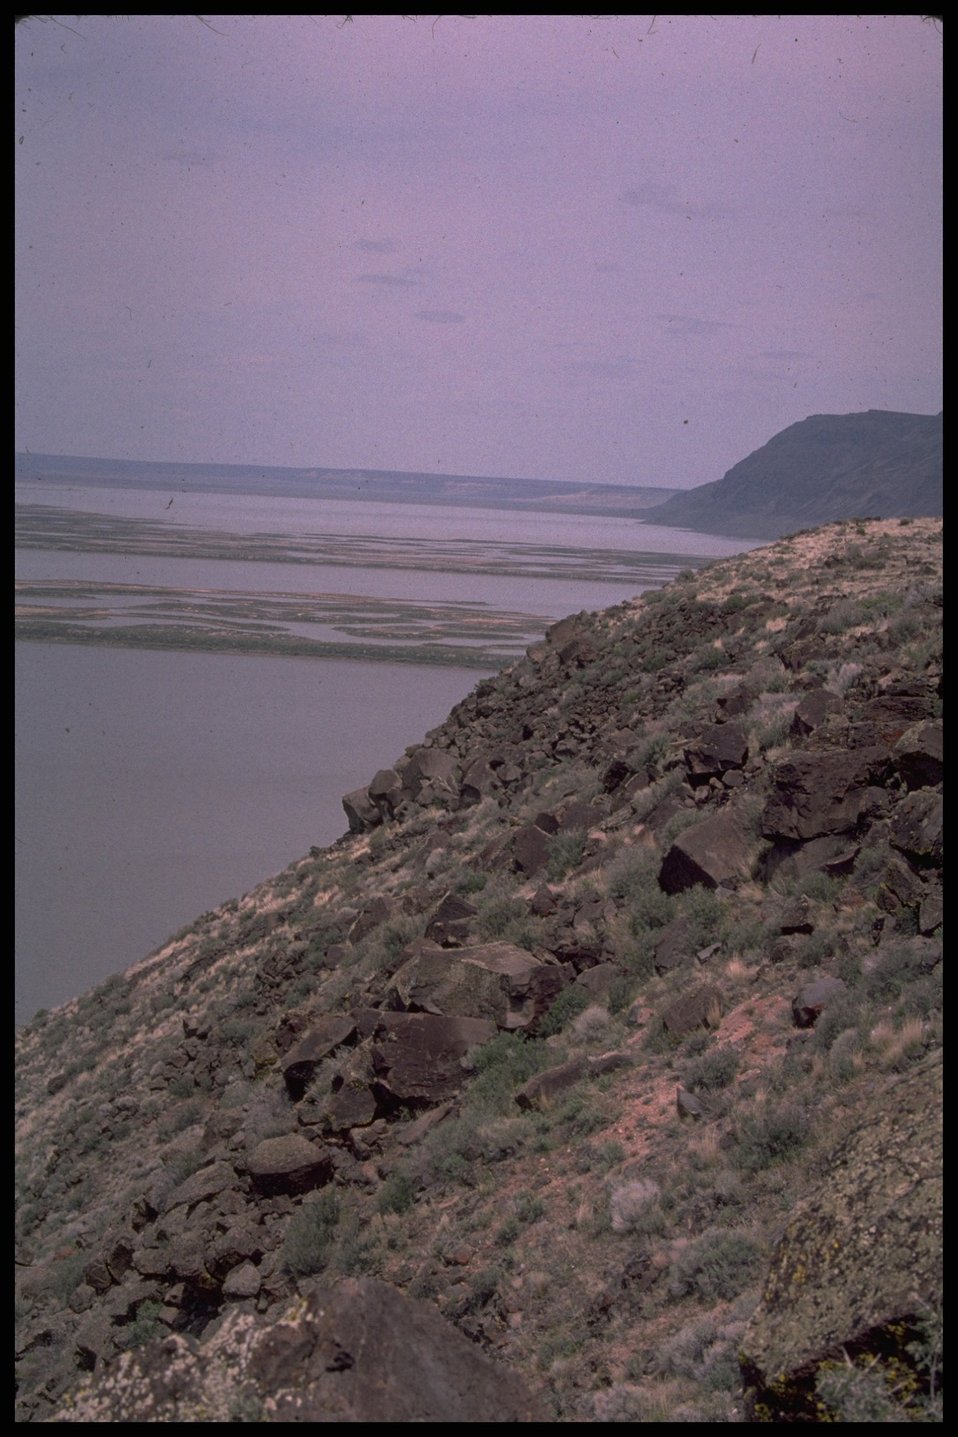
Scenic view of Warner Wet Lands from above, Lakeview District.